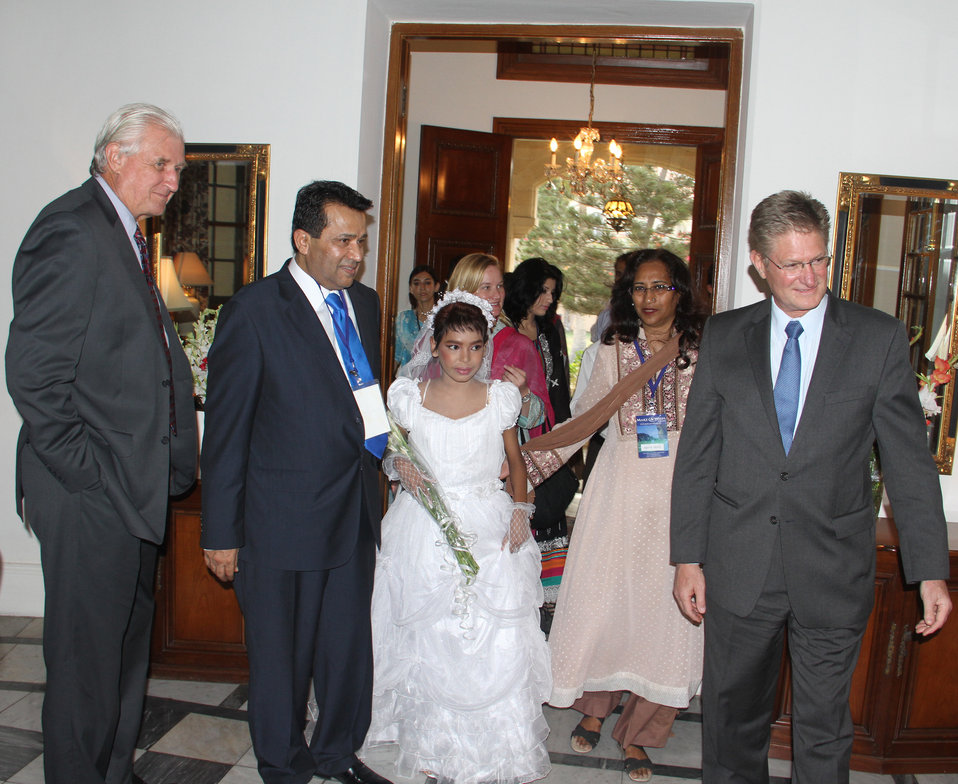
Make-A-Wish

Karachi, July 27, 2011 – Twelve year-old Saira Nadeem arrives at the old residence of the U.S. Consul General dressed up as a princess in a decorated horse-carriage. Saira Nadeem, who is suffering from a heart disease, wished to be a fairy or princess. With a grant from USAID, Make-A-Wish Pakistan will grant the wishes of 55 children.